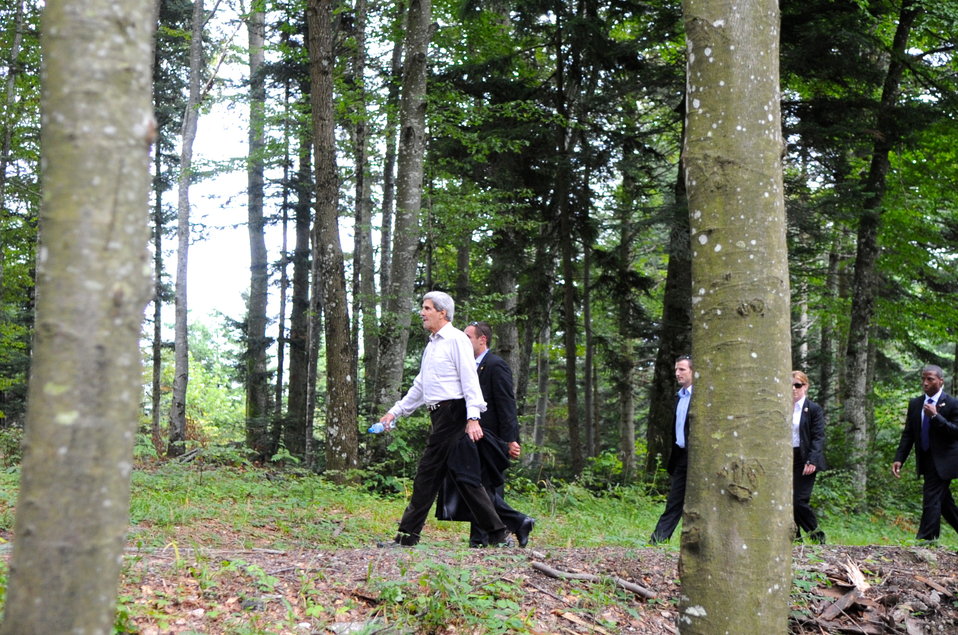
Secretary Kerry Hikes in the Swiss Mountains

4:32 p.m., September 14, 2013 - U.S. Secretary of State John Kerry walks amid the trees during a hike in the Swiss hillside after the U.S. and Russian governments reached an agreement to eliminate chemical weapons in Syria.